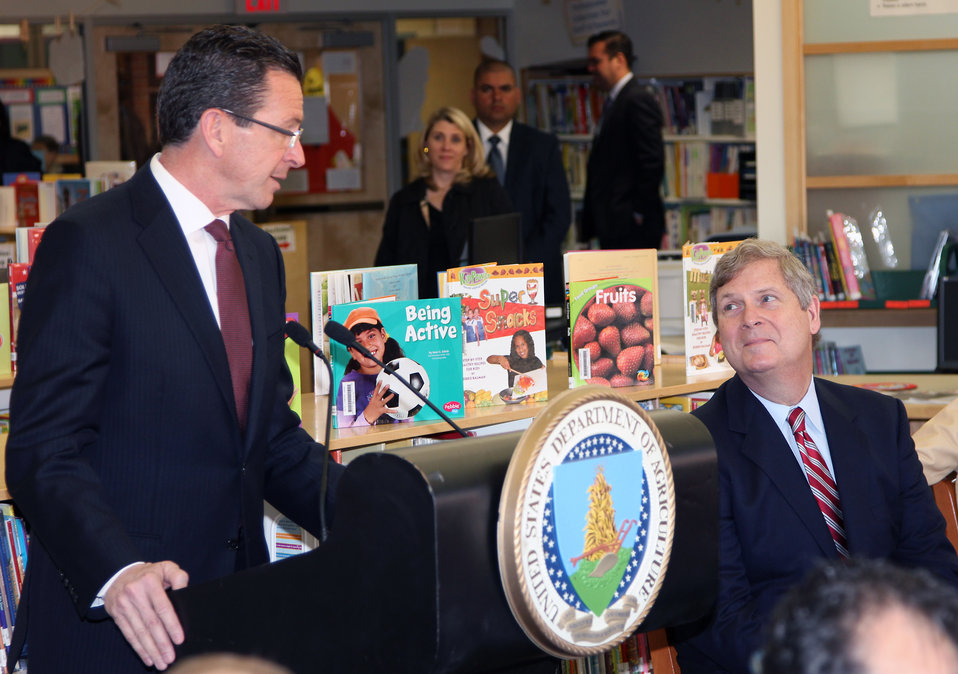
Governor Dannel Malloy speaks during Secretary Vilsack’s visit to the Henry A. Wolcott Elementary School in West Hartford, Connecticut to outline the U.S. Department of Agriculture (USDA) efforts to raise a healthier generation of Americans on Friday, April 5, 2013.